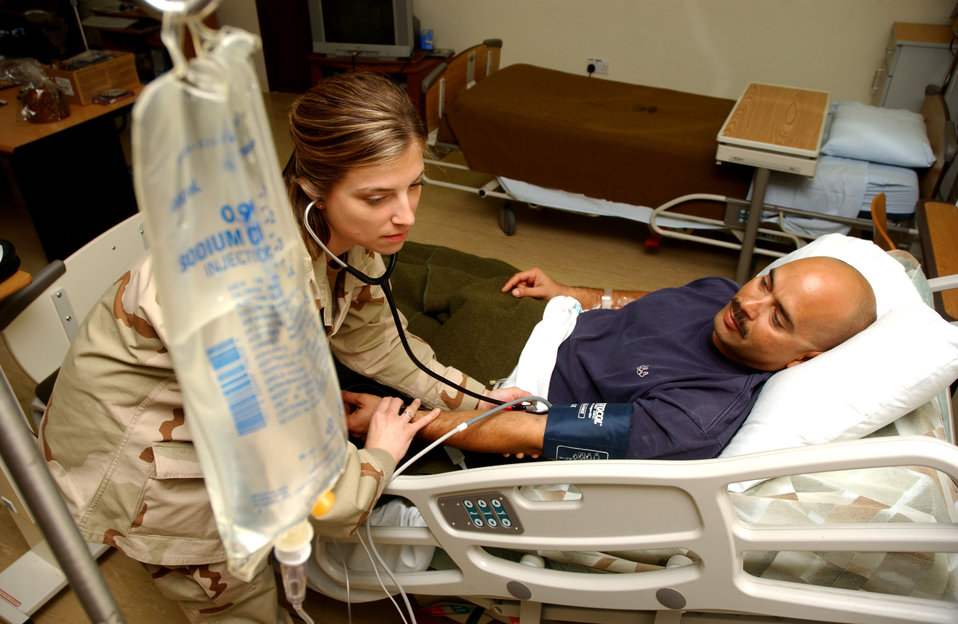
Blood pressure check

SOUTHWEST ASIA (AFPN) -- 1st Lt. Melissa Vonderheide checks the blood pressure of Master Sgt. Juan Alvarez. Lieutenant Vonderheide is a nurse with the 379th Expeditionary Medical Group.